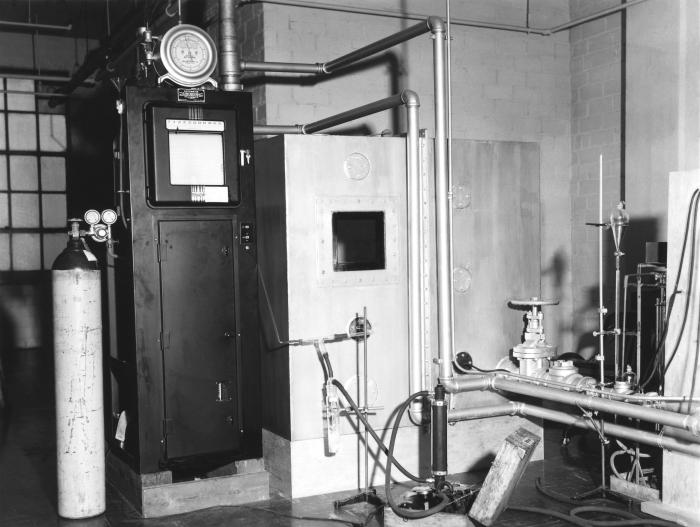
This historical photograph was provided by the Center for Disease Control's (CDC), National Institute for Occupational Safety and Health (NIOSH). Reprinted from the February, 1951 issue of 'Industrial Hygiene Newsletter', the image depicted the Cincinnati, Ohio laboratory of the Industrial Hygiene Division (IHD) of the U.S. Public Health Service (USPHS). In the photo, industrial hygiene equipment was measuring indoor air pollutants given off by various consumer products, and industrial machinery.